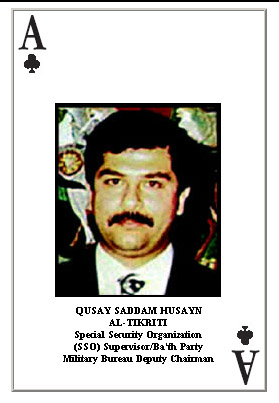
Most wanted

OPERATION IRAQI FREEDOM -- U.S. Central Command issued their most wanted deck of cards Friday which gvies U.S. Operation Iraqi Freedom troops an easy reference list for top Iraqi officials.